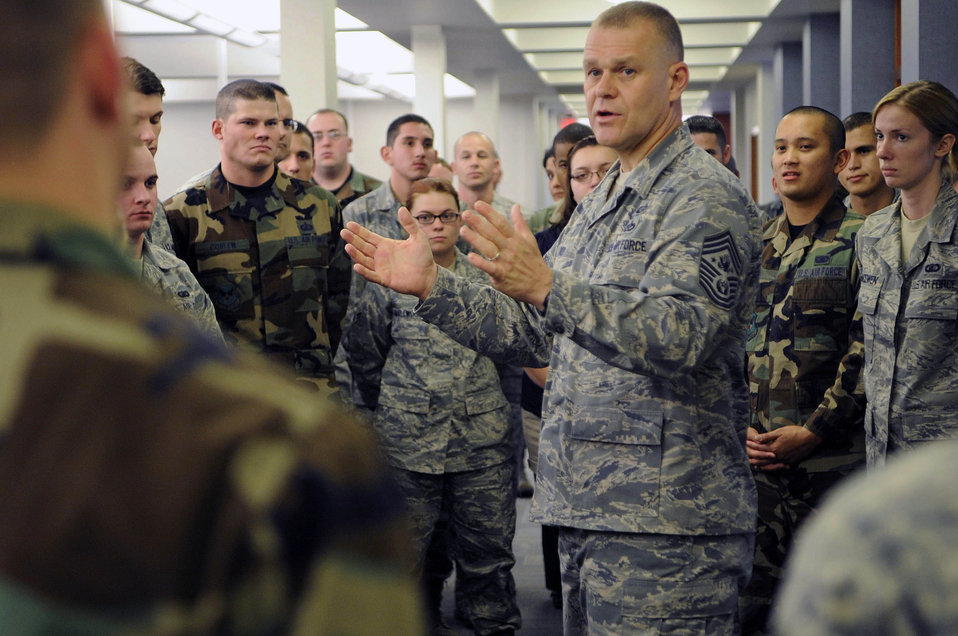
CMSAF visits Ellsworth

Chief Master Sgt. of the Air Force James A. Roy talks with Airmen and civilians at the financial services center, Oct. 21, 2009, during a two-day visit to Ellsworth Air Force Base, S.D. Chief Roy discussed the importance of their finance and travel work to the Air Force during his visit.